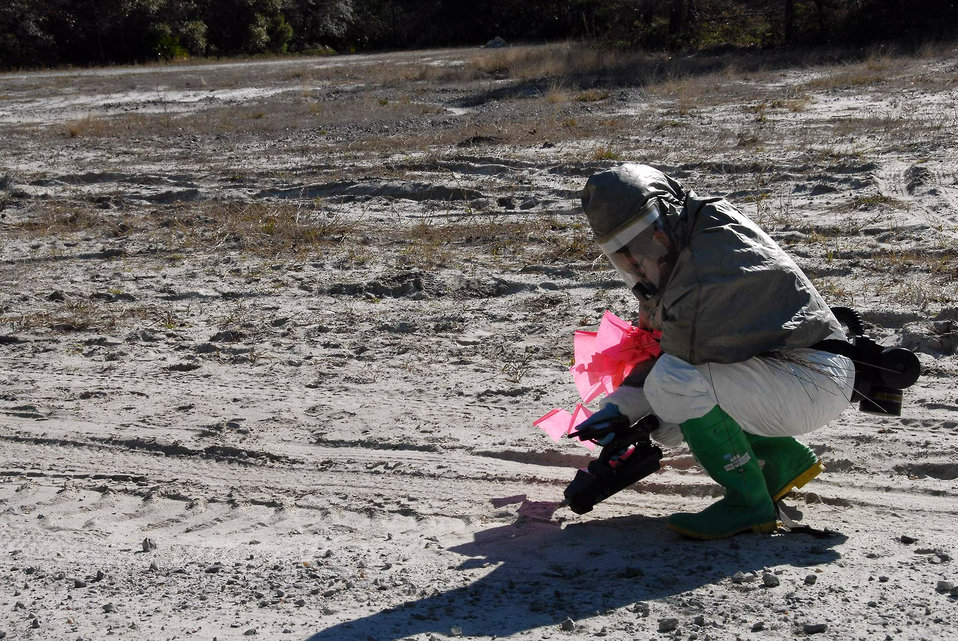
Silver Flag

Staff Sgt Karla J. Belliveau, 104th Fighter Wing, tests for radiation during a Silver Flag exercise at Tyndall Air Force base, Fla., Feb. 5. Silver Flag is training for Air Force members to learn new skills in a simulated combat environment.